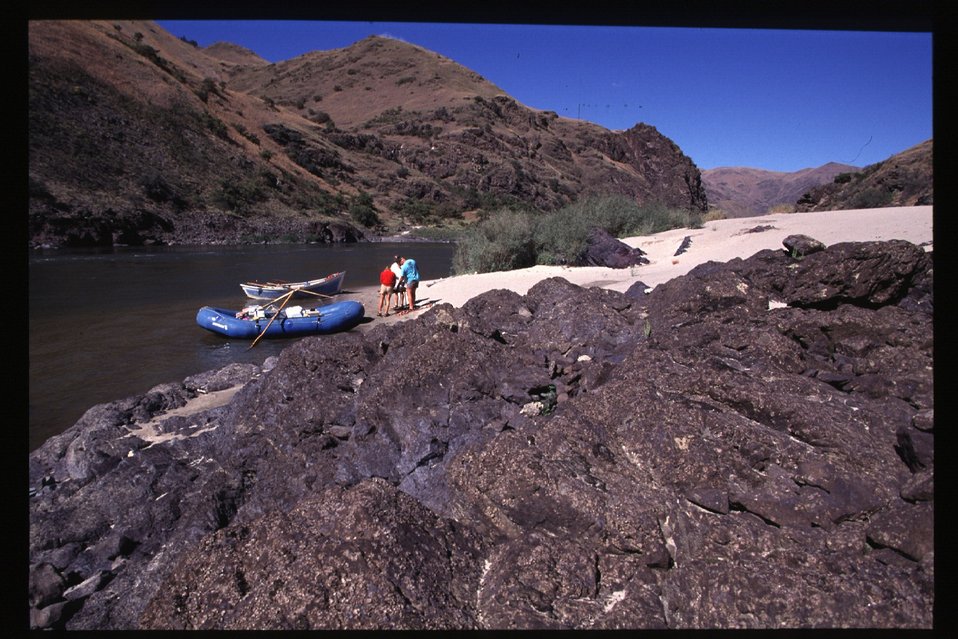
Beach Raft and Dory Lower Salmon River Cottonwood Field Office UCSC Upper Columbia Salmon Clearwater District